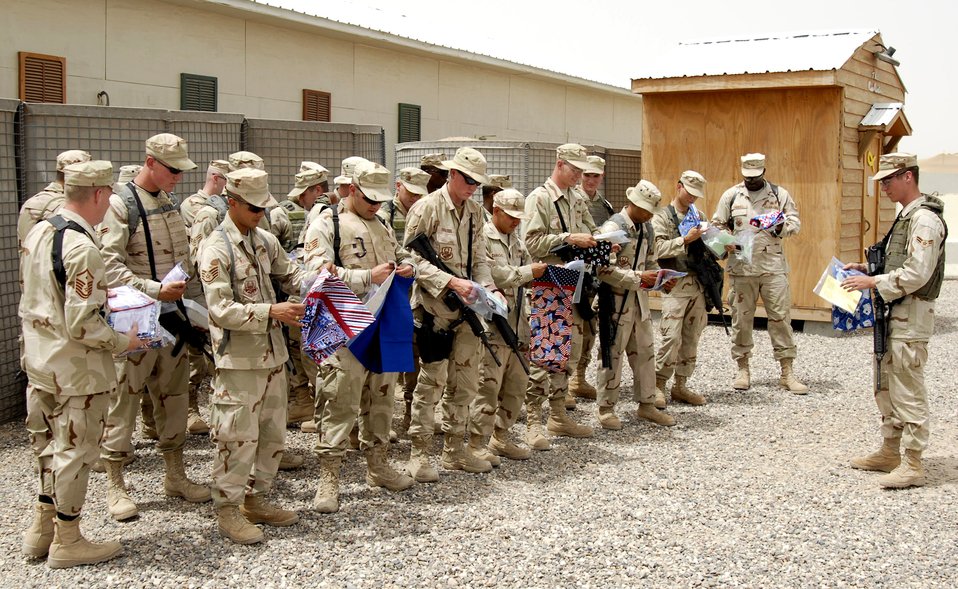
Operation Pillowcase brings piece of home to Airmen

Members of the 886th Expeditionary Security Forces Squadron receive pillowcases made and donated by the community of Concord, Calif., April 24 at Camp Bucca, Iraq. Operation Pillowcase gave members of the 886th ESFS a reminder of home. The project was spearheaded by Deborah Burrow, mother of Airman 1st Class Paul Beasley (far right) who is an 886th ESFS member.